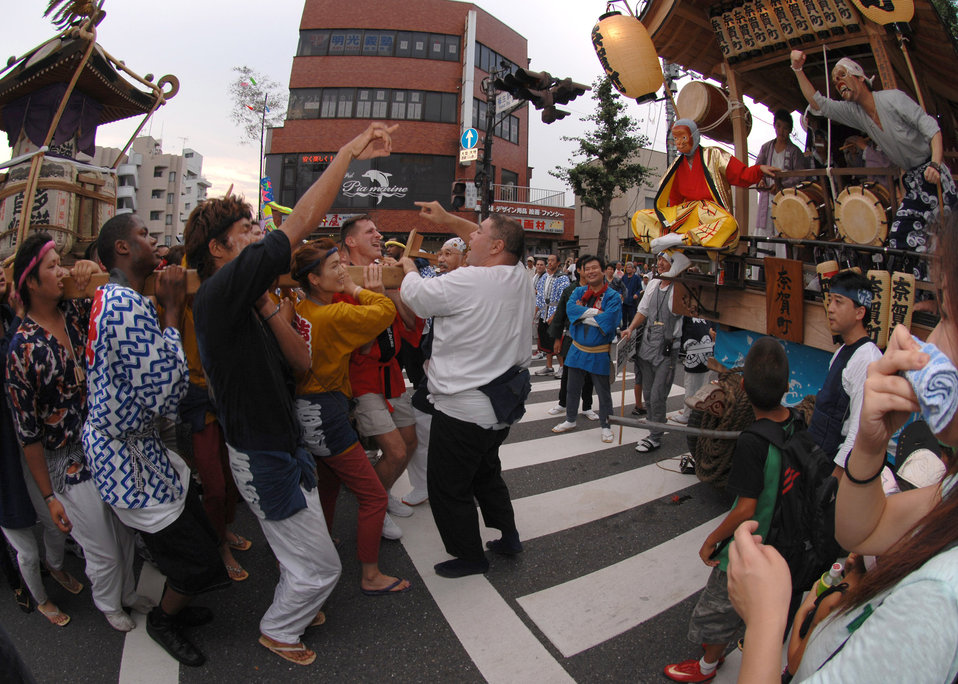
Yokota Airmen participate in Japanese festival

Military members from Yokota Air Base, Japan, cheer and carry a shrine in front of a mobile stage while Japanese and performers cheer during the Fussa Tanabata Festival Aug. 8 at Fussa City, Japan. The group carried the shrine from Shinmeisya Shrine to the Fussa City Hall.